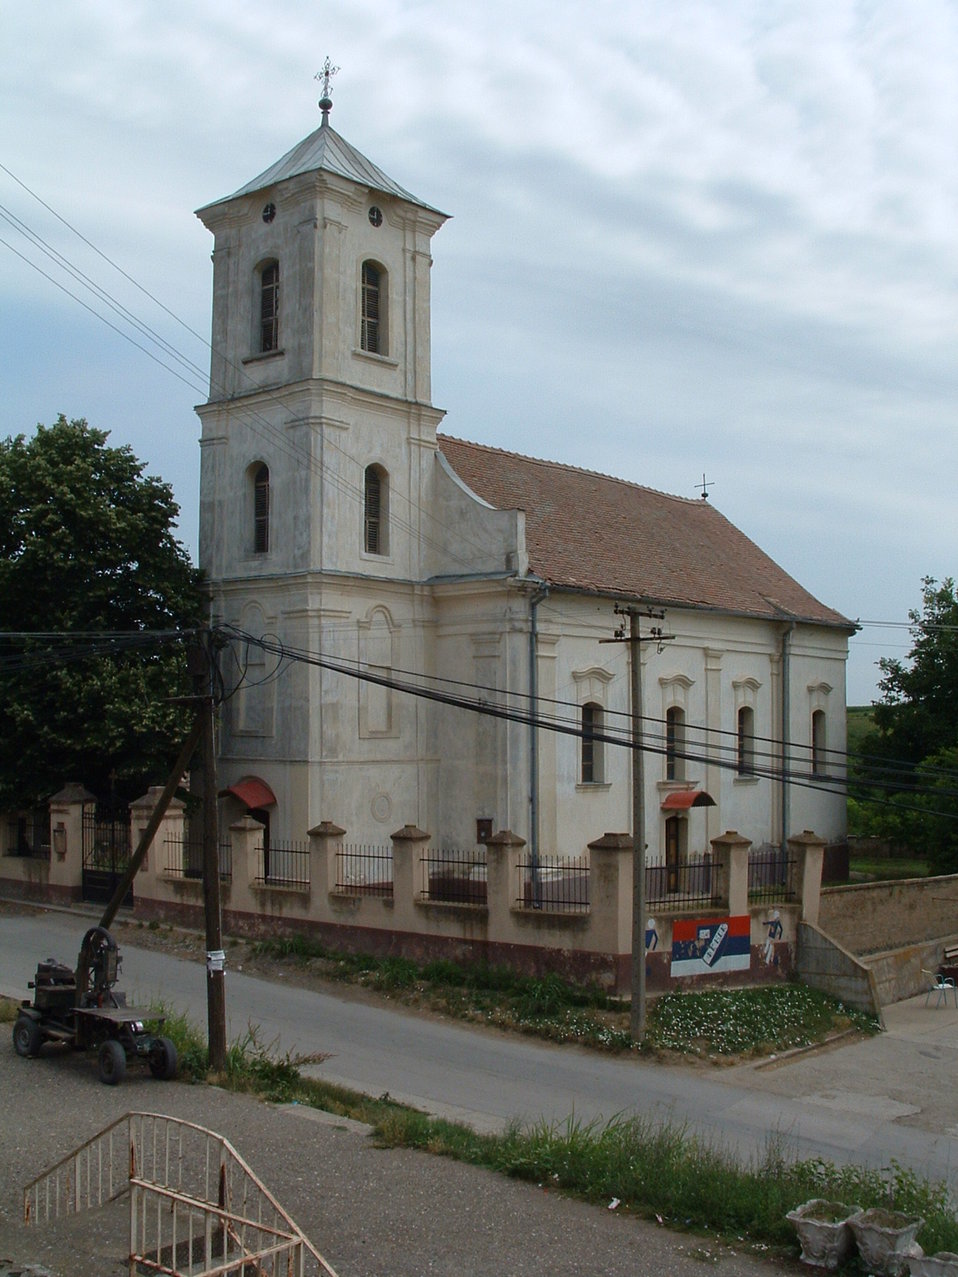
Српски / srpski: Црква у Бешенову Church in Bešenovo